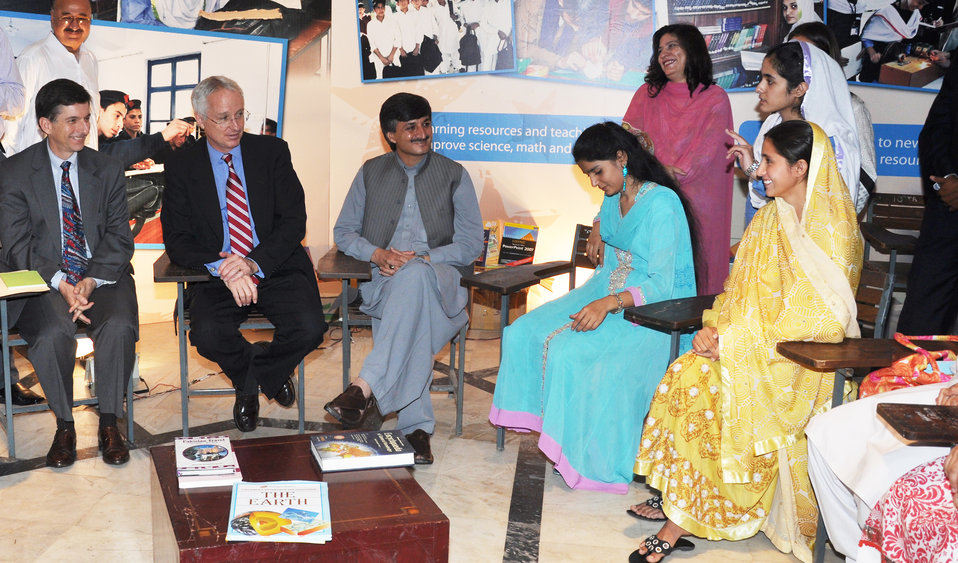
USAID Education Project in FATA and Malakand

Islamabad, July 26, 2011 – U.S. Ambassador Cameron Munter, USAID Mission Director Andrew Sisson, and KP Education Minister Sardar Hussain Babak talking to the students from six districts of Malakand and 13 regions and agencies of FATA benefited from the USAID ED-LINKS project.

Students and officials celebrated completion of USAID’s ED-LINKS project in FATA and Malakand. The project has improved schooling for 450,000 students in over 700 schools in FATA and Malakand over the past three years. In support of priorities established by the governments of KPK and FATA, the project helped train more than 3,000 teachers, support teacher training institutes, and teach children in camps for internally displaced persons.